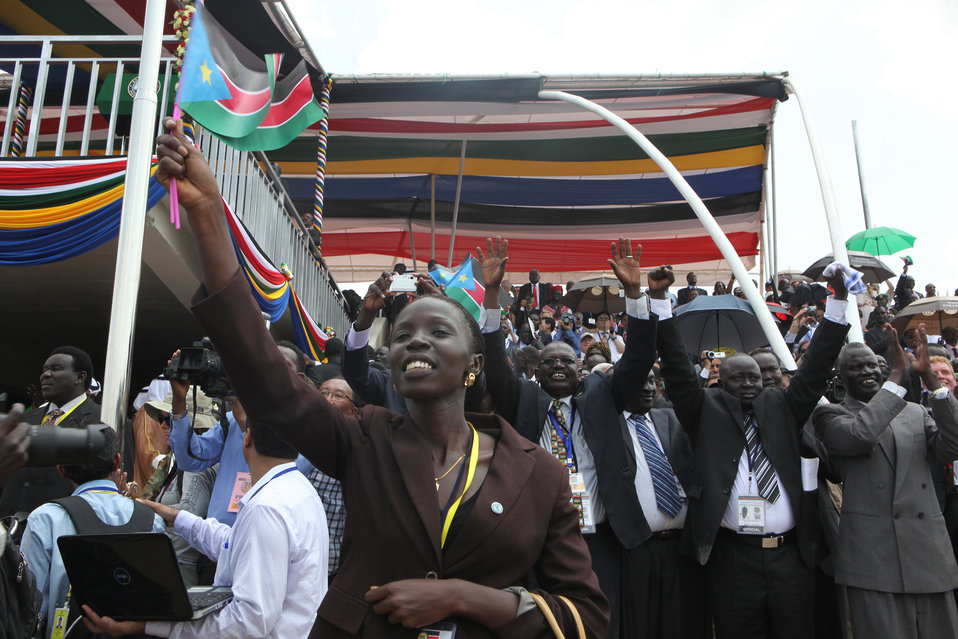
South Sudan Independence Day

Guests celebrate the Republic of South Sudan Independence Day in Juba, South Sudan on July 9, 2011.